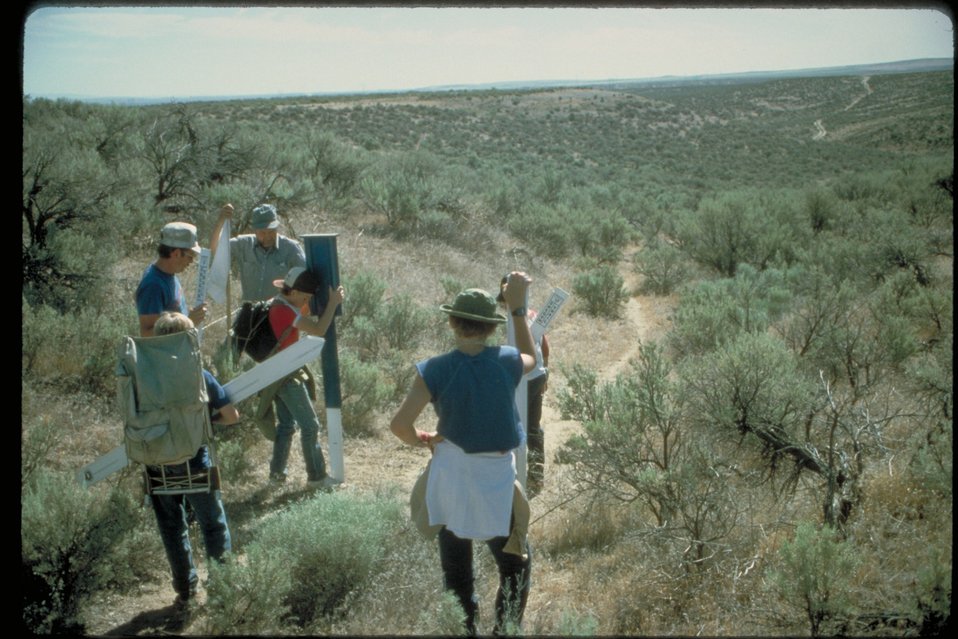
OHV Road